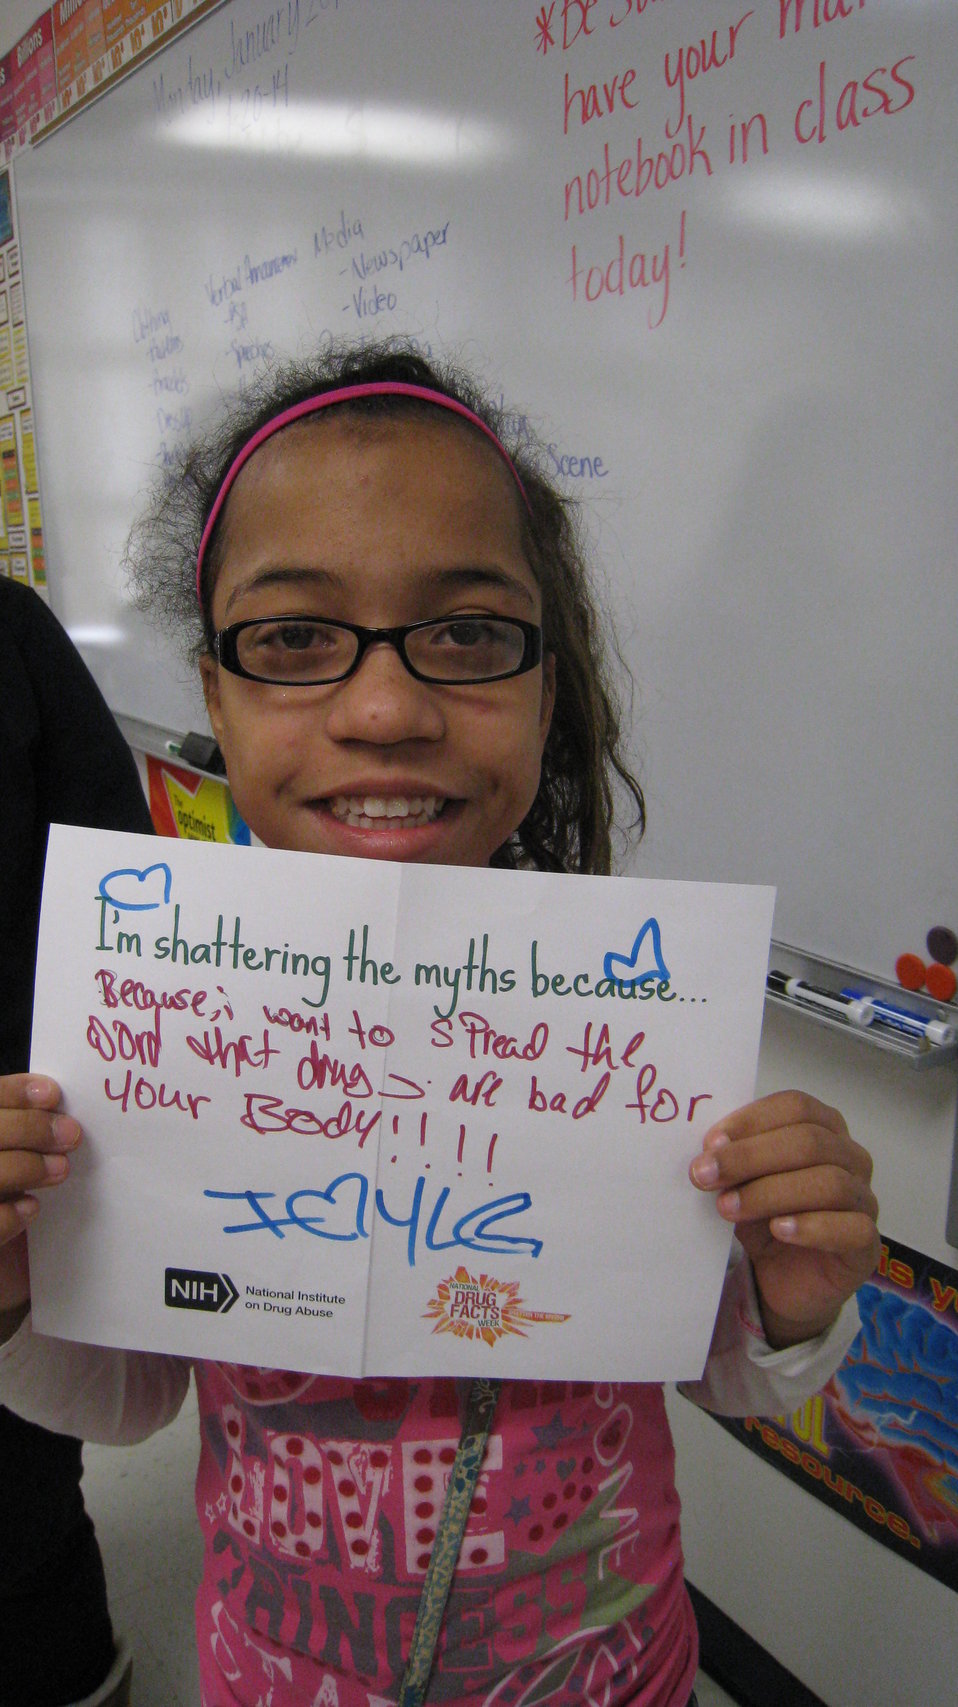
I'm Shattering the Myths Because...

Teenagers from the Van Buren County SAFE Coalition's, Youth Leadership Council (YLC) in Keosauqua, Iowa participate in various events during National Drug Facts Week, 2014.